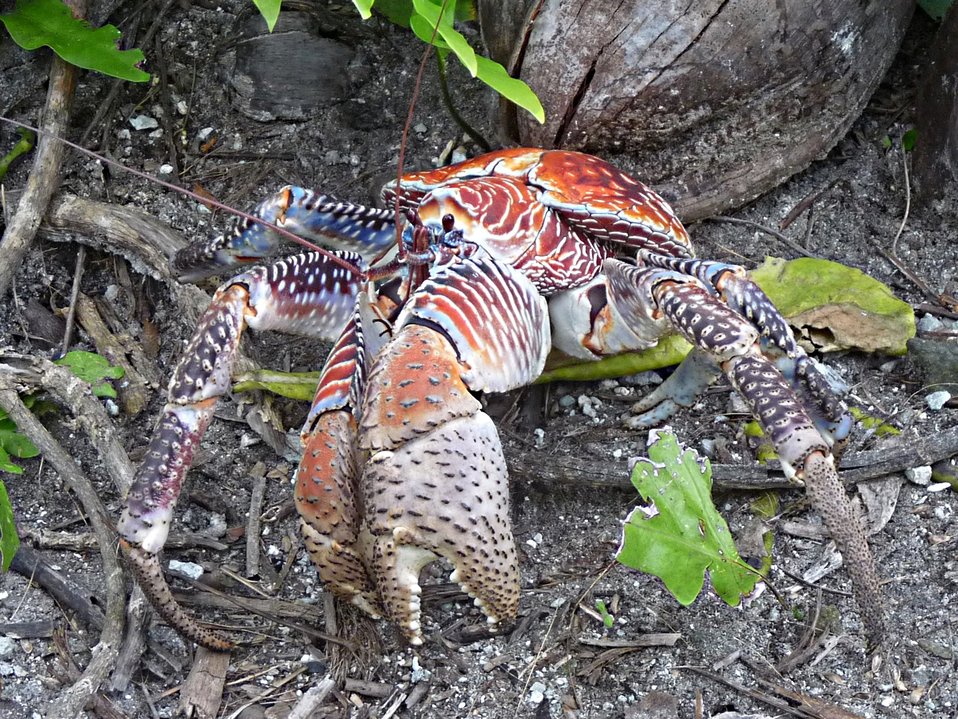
Coconut Crab - Palmyra Atoll NWR